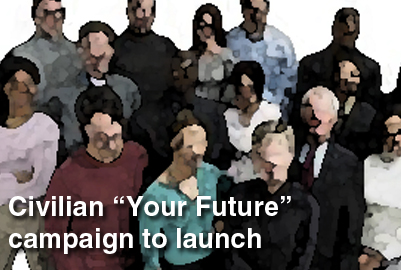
Civilian

Air Force officials plan to launch a campaign in September to help base personnel specialists market civilian job openings. Known as